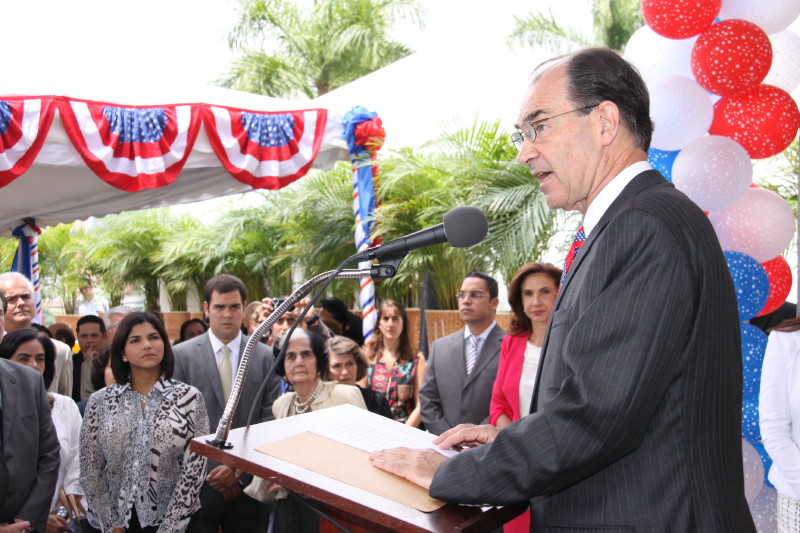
Ambassador Duddy Delivers Remarks

U.S. Ambassador to Venezuela Patrick D. Duddy delivers remarks to the diplomatic corps and guests during the U.S. Embassy Caracas in Venezuela's U.S. Independence Day celebration on June 30, 2010.